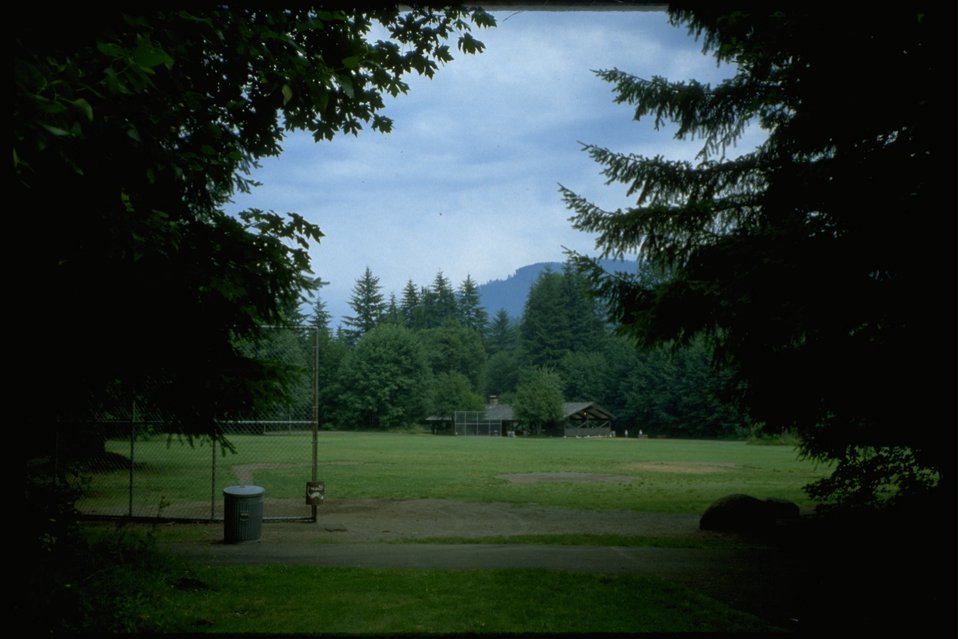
Some of the recreational facilities at the Wildwood Recreation Site.